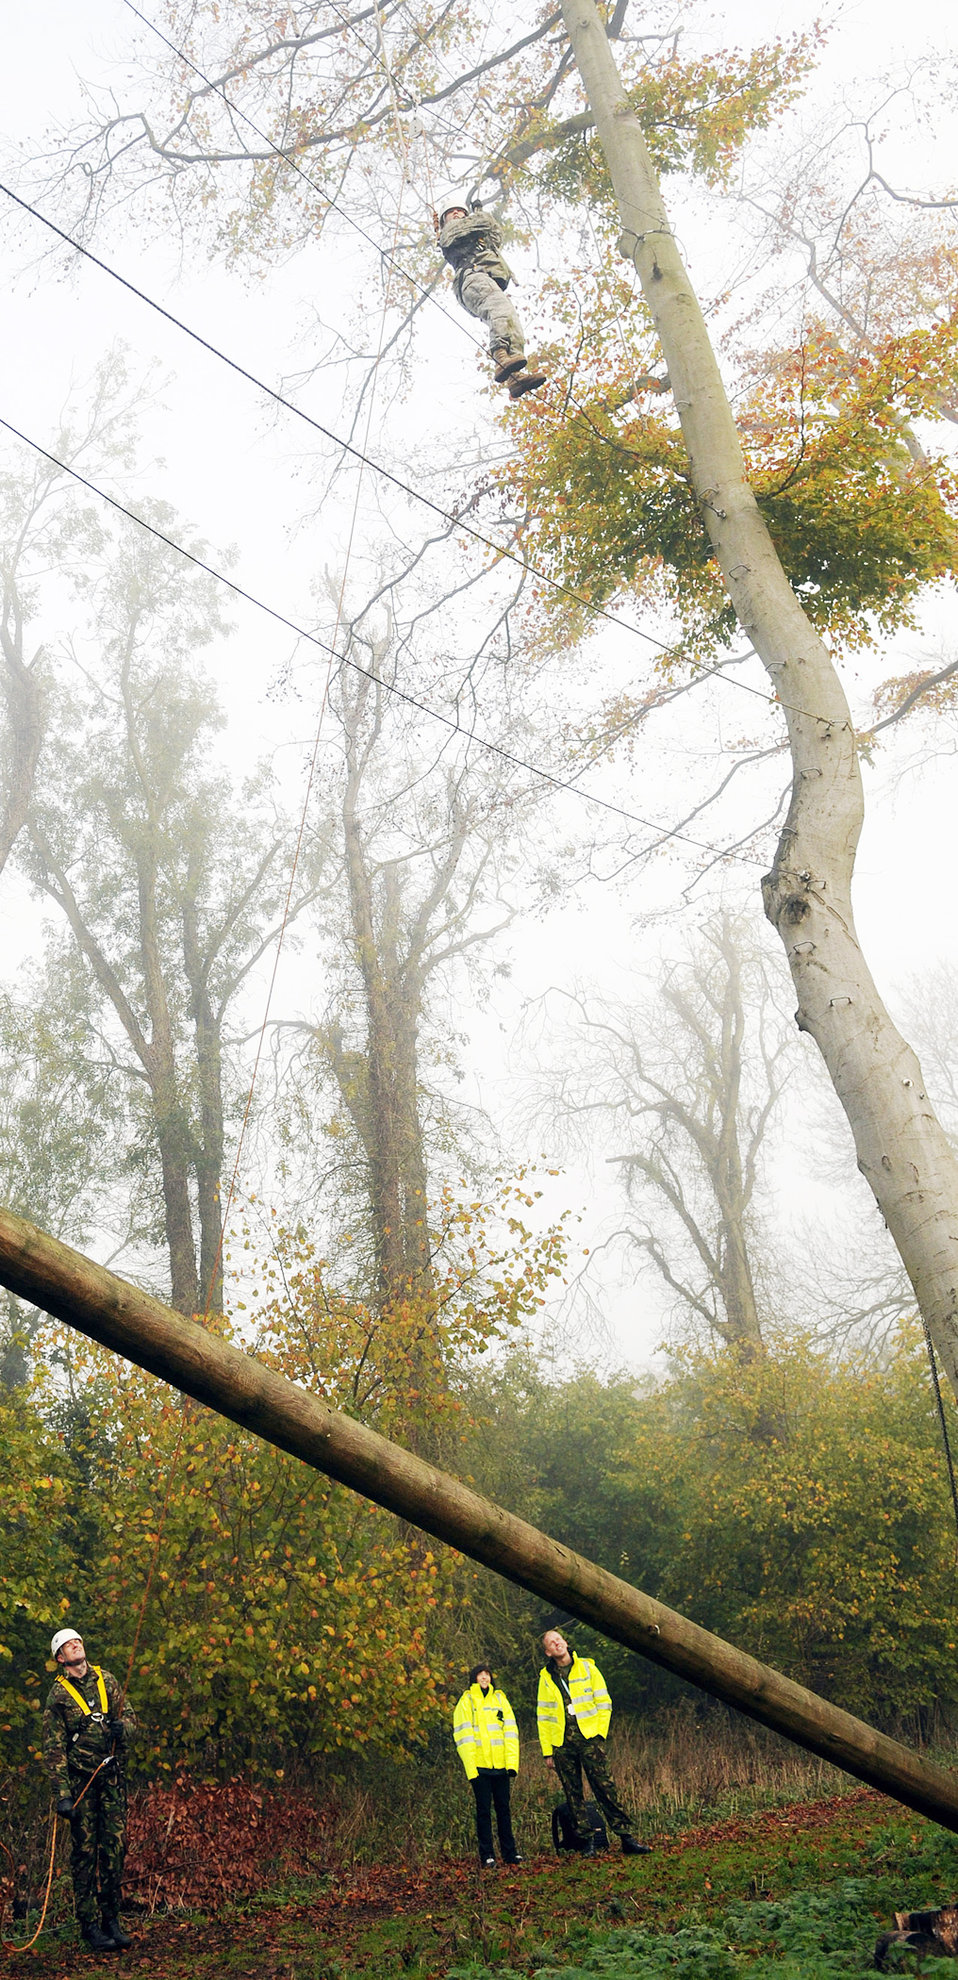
American, British forces join for leadership development

Staff Sgt. Samantha Webb scales a segment of the high-ropes course at Royal Air Force Marham Nov. 9, 2009. She is secured by ropes by a British airman about 50-feet below during the Leadership, Ethos and Air Power Day, a leadership building event hosted by the camp three times a year. About 40 U.S. Airmen from RAFs Mildenhall and Lakenheath were invited to attend the teambuilding activities. Sergeant Webb is from the 48th Security Forces Squadron.